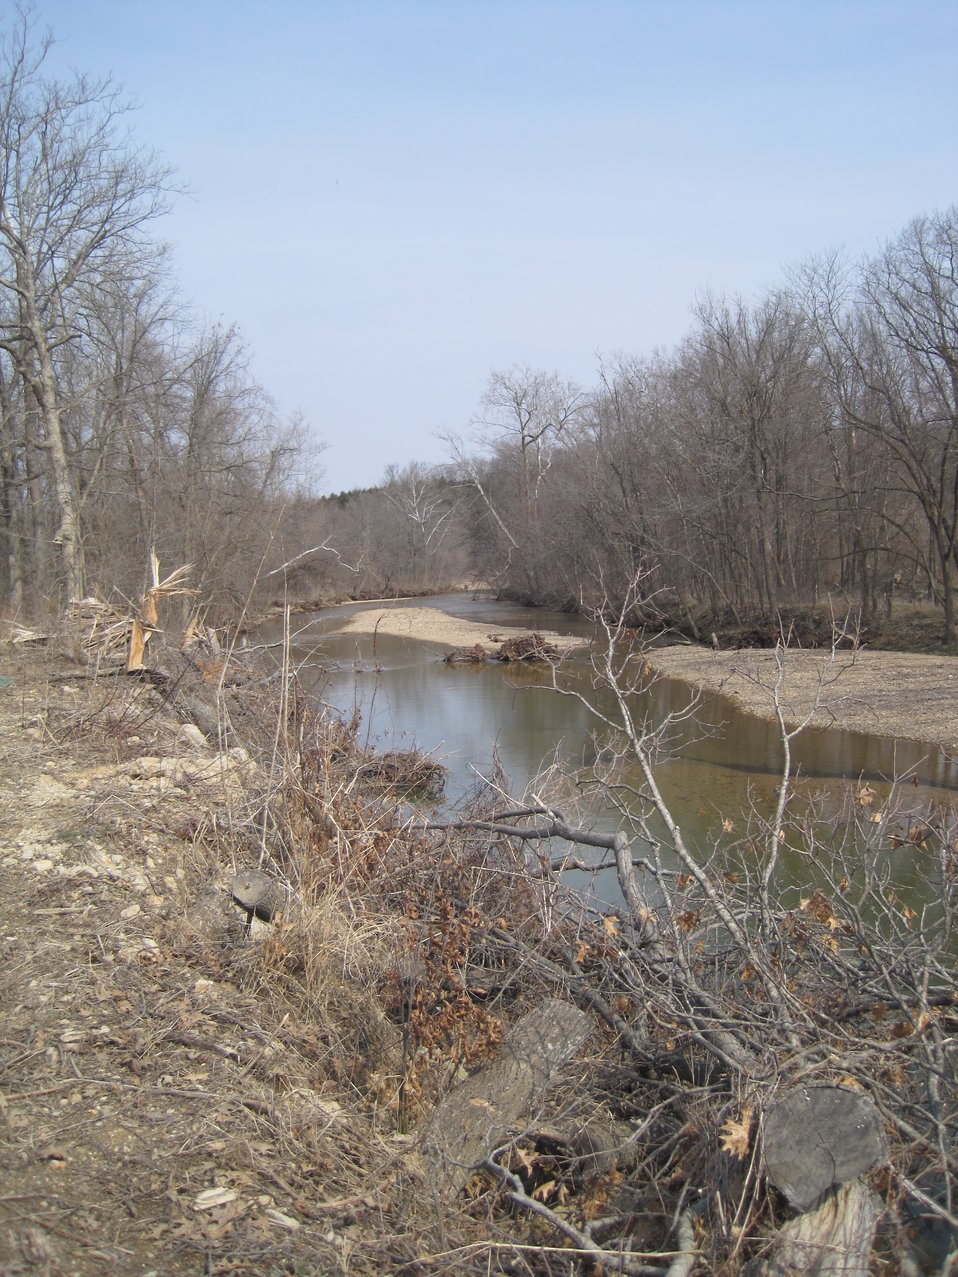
Ambrose Project - Before

Before: riparian corridor, looking downstream. Prior to Partners for Fish and Wildlife involvement, the remaining trees were cut to 'hinge' over the bank, mistakenly thinking it would provide protection.